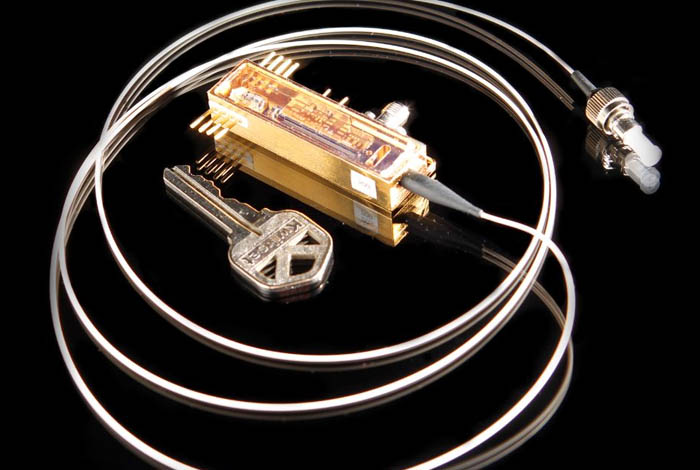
Researchers at Los Alamos National Laboratory, have made smart phone security impenetrable by creating a quantum encryption device called a qkard or quantum smart card.